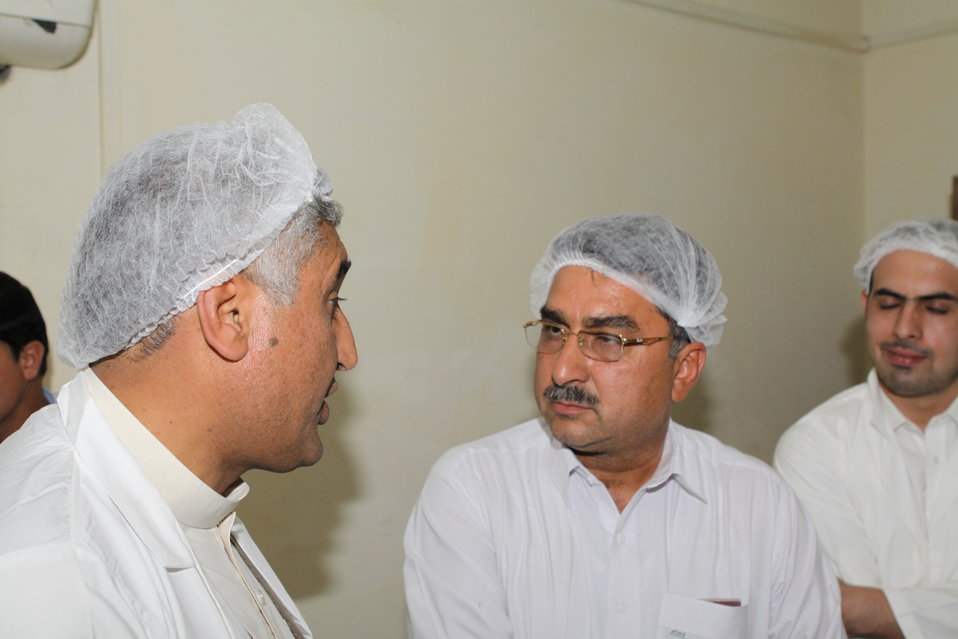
Bolan Poultry Farm